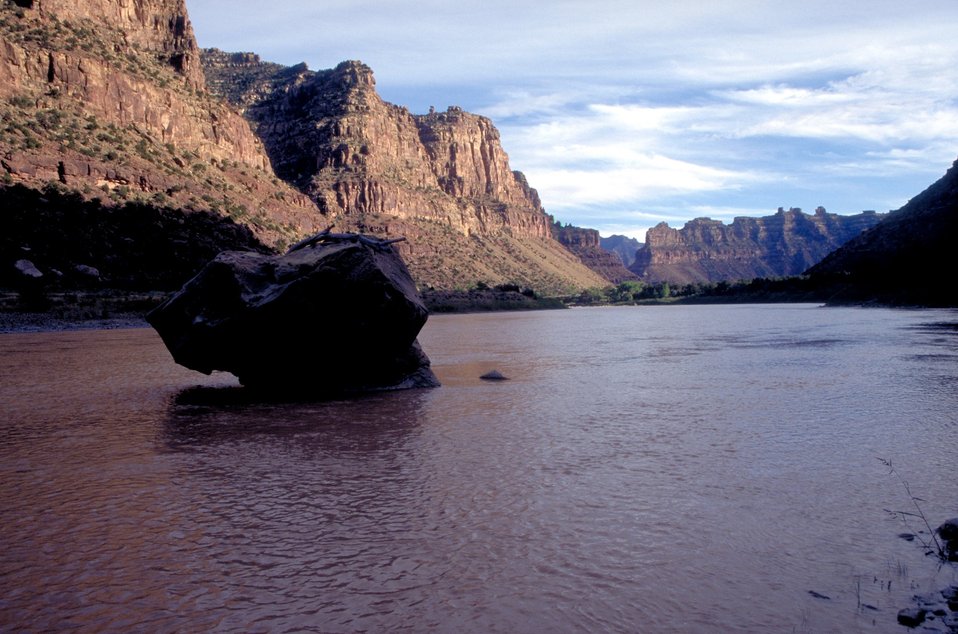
Desolation/Gray Canyons near Price, Utah.